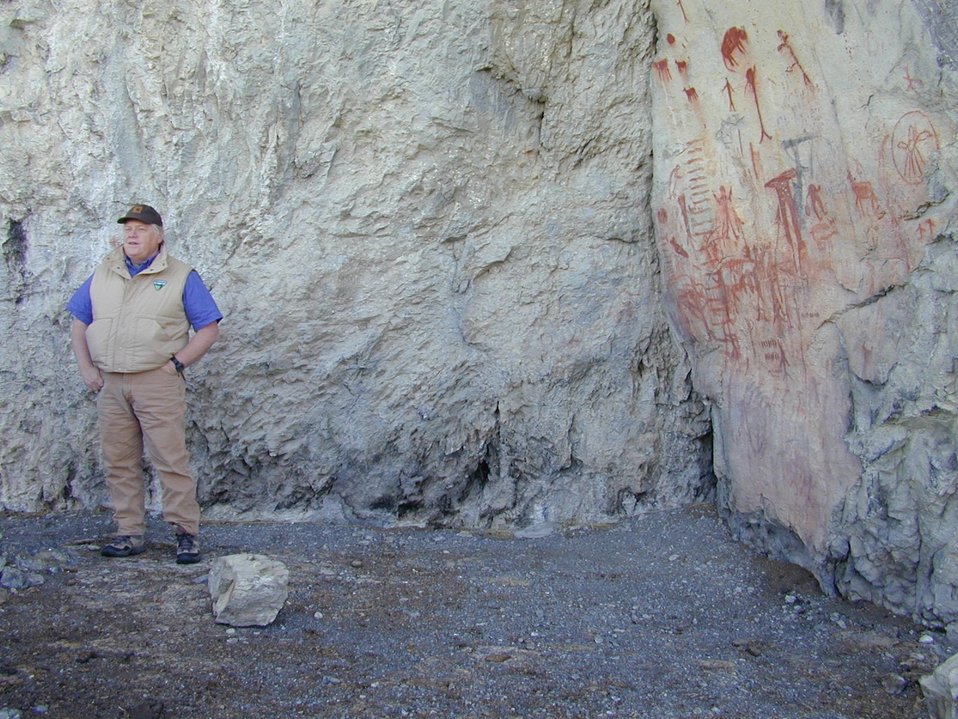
Birch Creek Valley Idaho Falls Field Office USRD Upper Snake River District